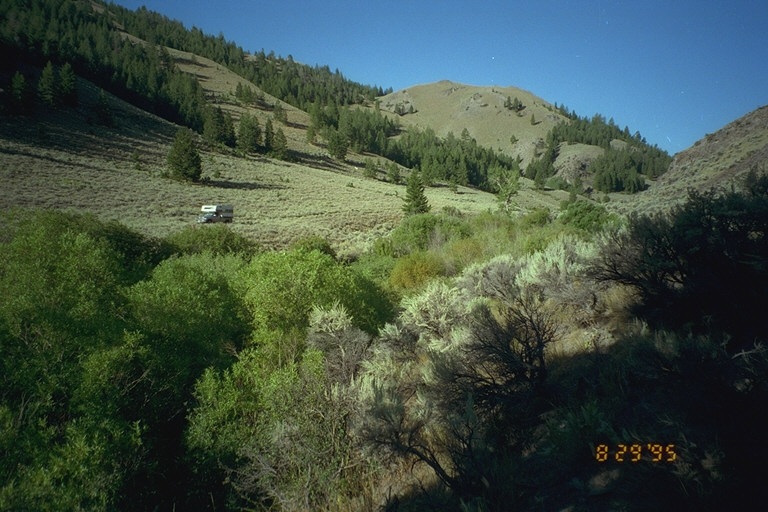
Riparian area Public Lands Salmon Field Office UCSC Upper Columbia Salmon Clearwater District